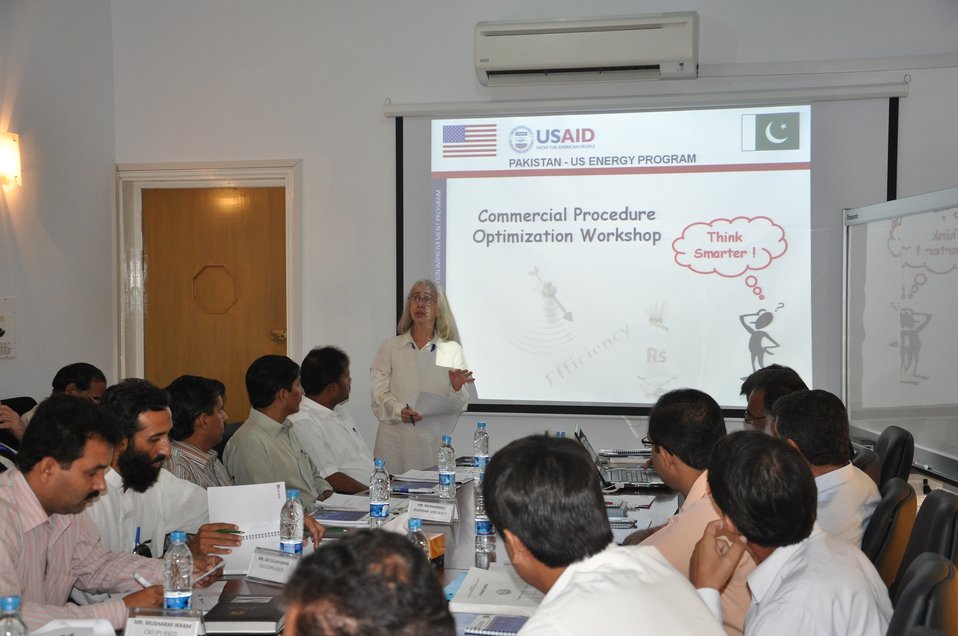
7 Sept 2011, Discussion on Recommendations (Proposed Changes) with Distribution Companies Senior Management

USAID's Power Distribution Program held a set of training workshops on September 7-8th aimed at improving the commercial procedures and efficiency of power distribution companies (DISCOs). The topics under discussion included the 'Meter Reading Process' and 'Meter Change Process' and finding ways to bring improvements to DISCOs' existing procedures by streamlining the flow of documents and eliminating redundancies without compromising transparency and accountability.